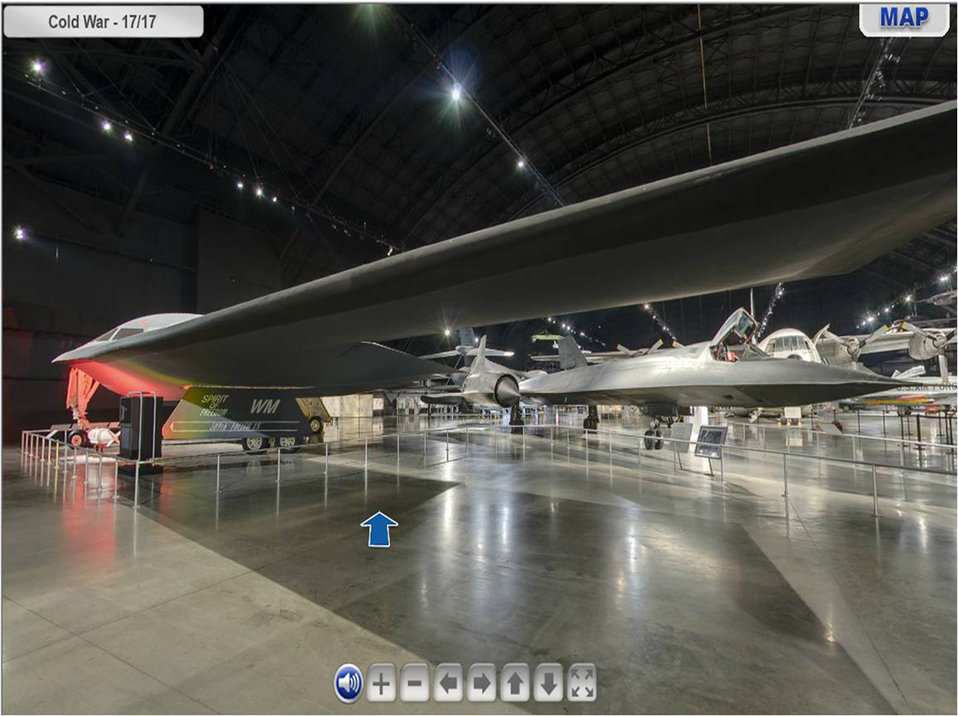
Online visitors can experience entire museum through Virtual Tour

Pictured here is a screenshot of the B-2 Spirit and SR-71A from the National Museum of the U.S. Air Force's Virtual Tour website. The aircraft are located in the Cold War Gallery.